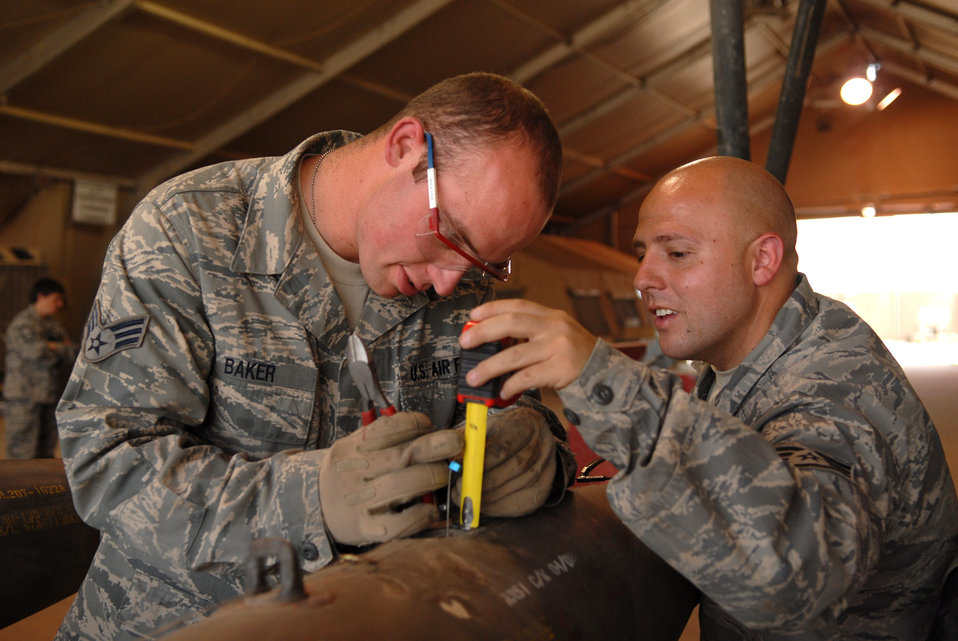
Some assembly required

Senior Airman Nathan Baker and Staff Sgt. Jose Landeros measure the length of a guided bomb unit-12 arming lanyard to a bomb body June 16 at Joint Base Balad, Iraq. This measurement varies based on the aircraft to which the munition is attached. The GBU-12 is a laser-guided munition. The Airmen are part of the 332nd Expeditionary Maintenance Squadron munitions systems specialists team responsible for building, maintaining and storing various munitions to support Operation Iraqi Freedom kinetic strikes. Airman Baker is deployed from Hill Air Force Base, Utah; Sergeant Landeros is deployed from Shaw AFB, S.C.